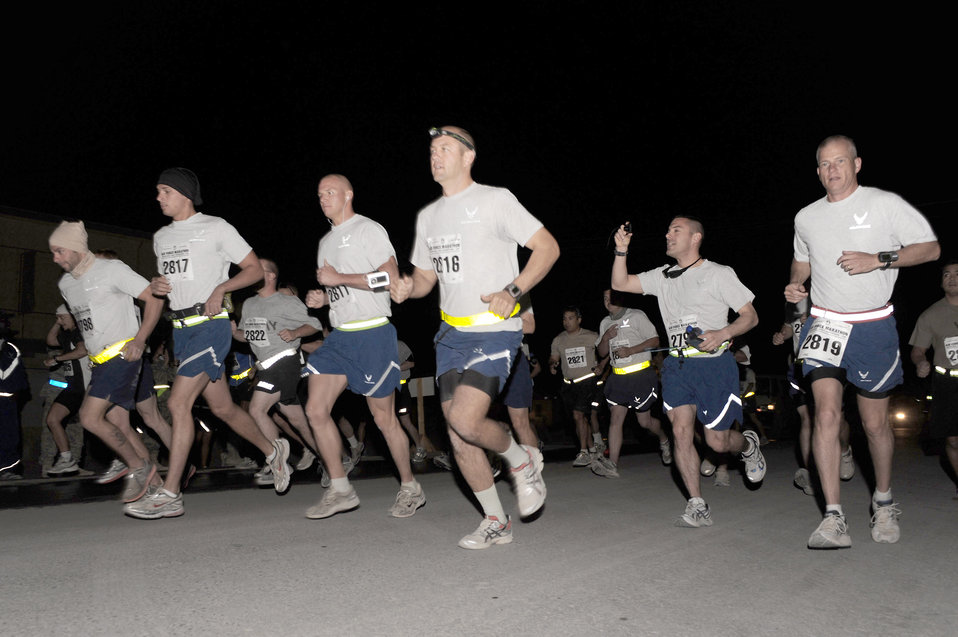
Deployed Air Force Marathon mirrors annual stateside race

Airmen participating in the Air Force Marathon start the race early in the morning Sept. 11, 2010, at Kandahar Airfield, Afghanistan.